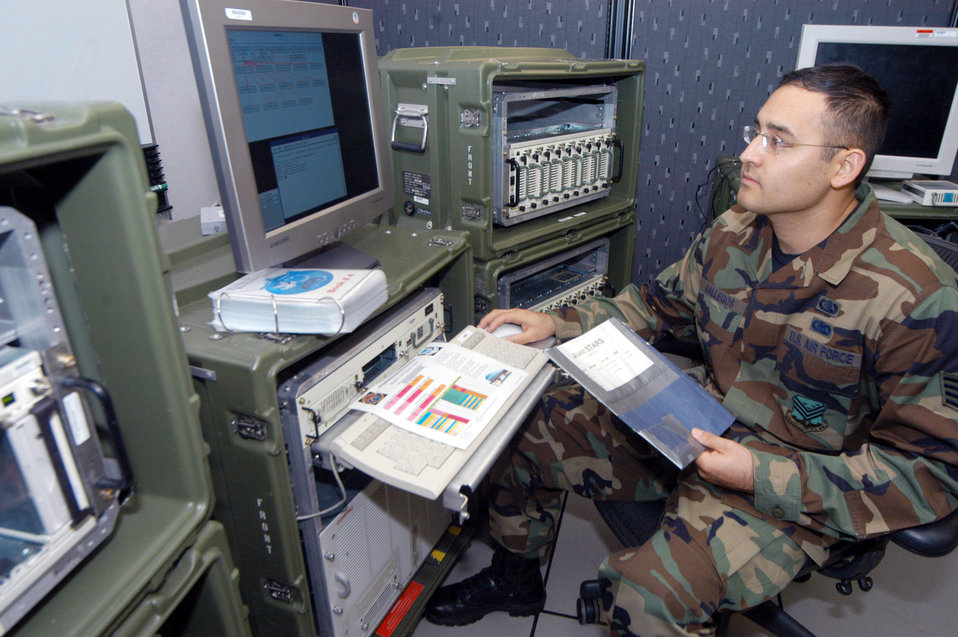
Software maintainers help warfighters achieve mission

Staff Sgt. Ramon Gallegos copies imagery maps that E-8 Joint Surveillance Target Attack Radar System flight crews use. Sergeant Gallegos is assisgned to the 116th Computer Systems Squadron.